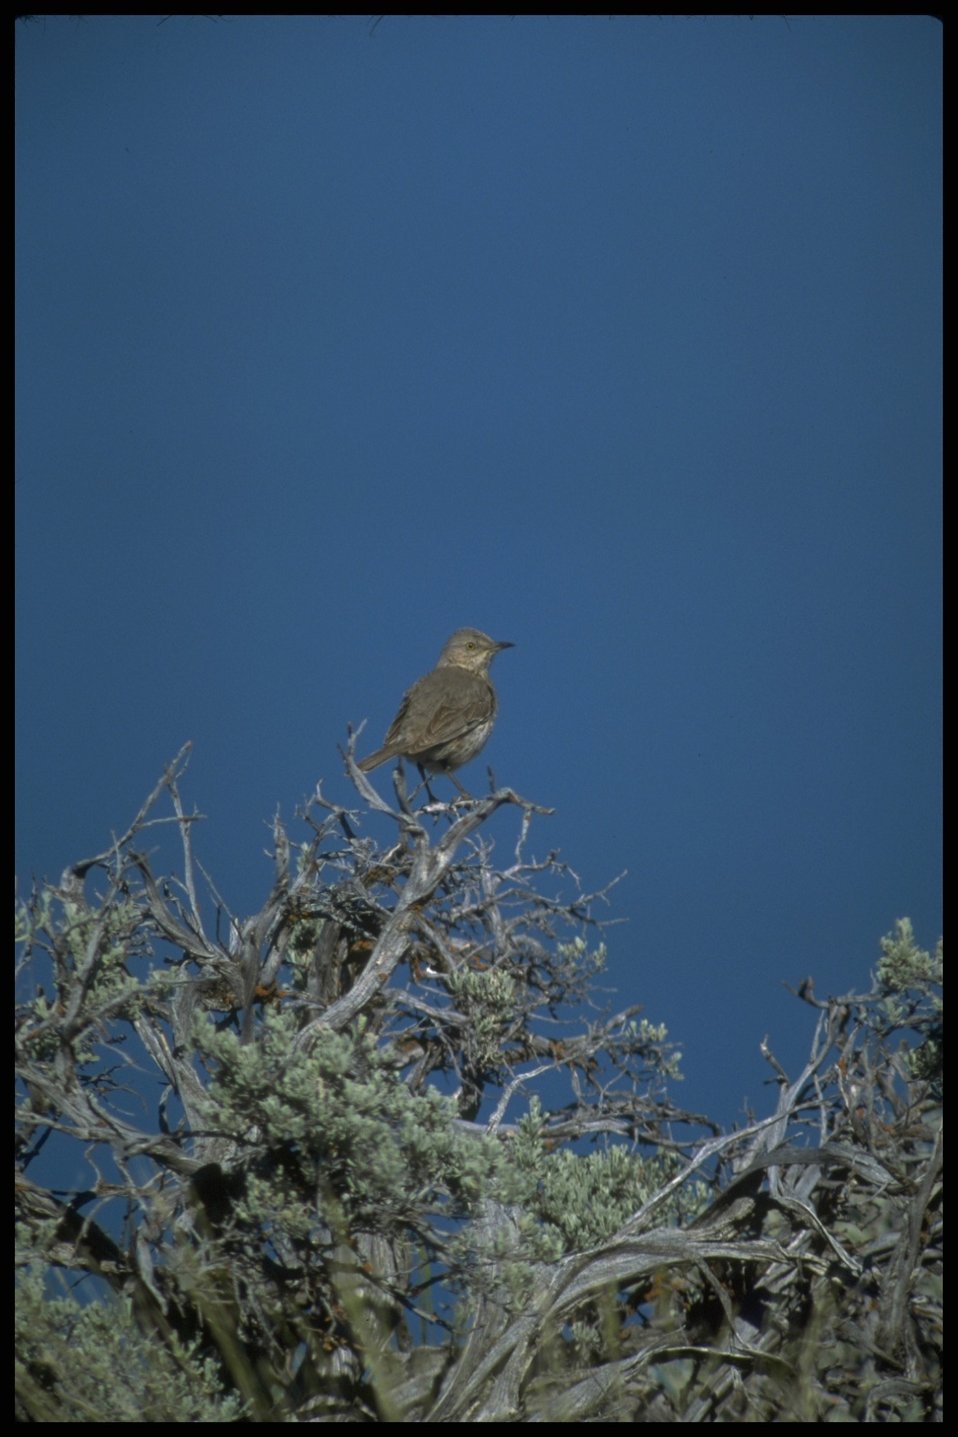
Far shot of bird (possibly Yellow Brested Warbler). Lakeview District.